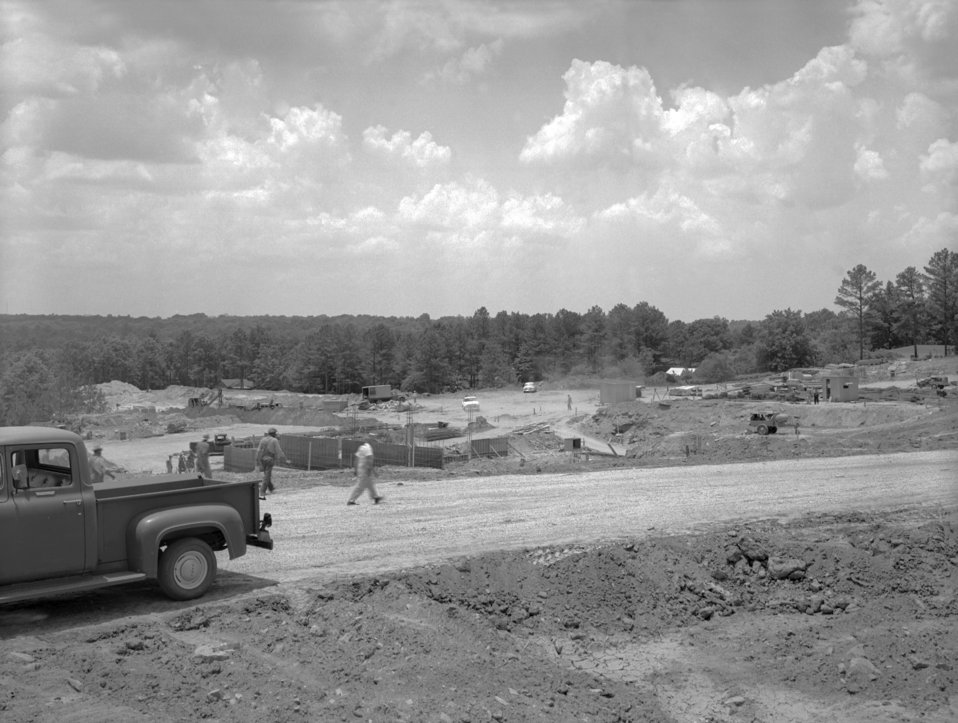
This photograph depicts an early phase of the CDC Clifton Road campus under construction in 1958.